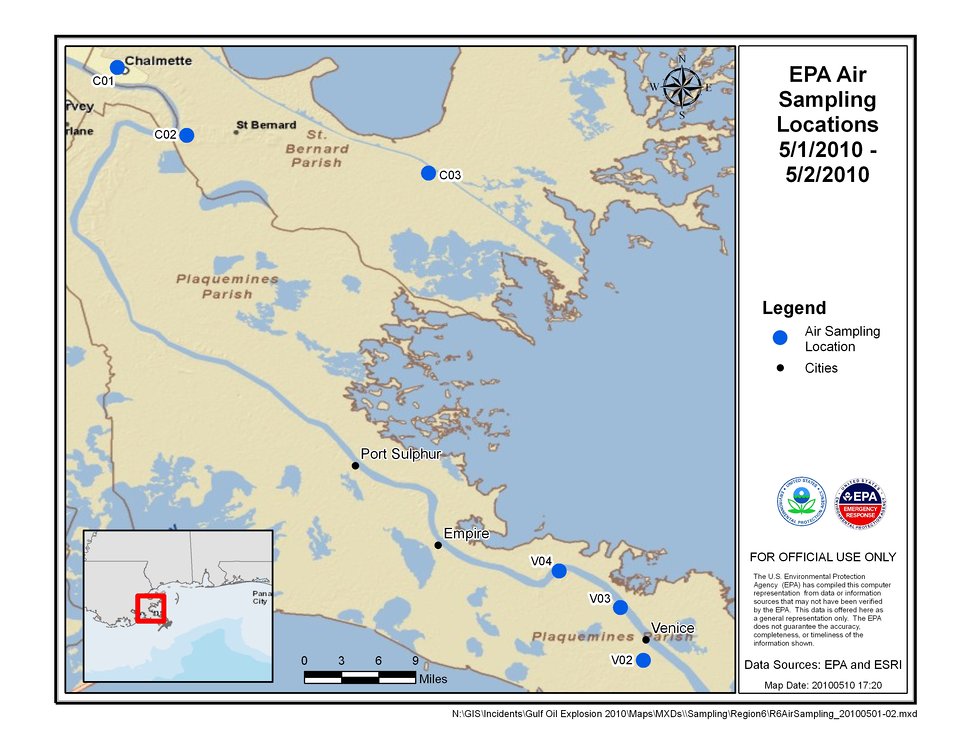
EPA Air Sampling Locations May 1-2, 2010